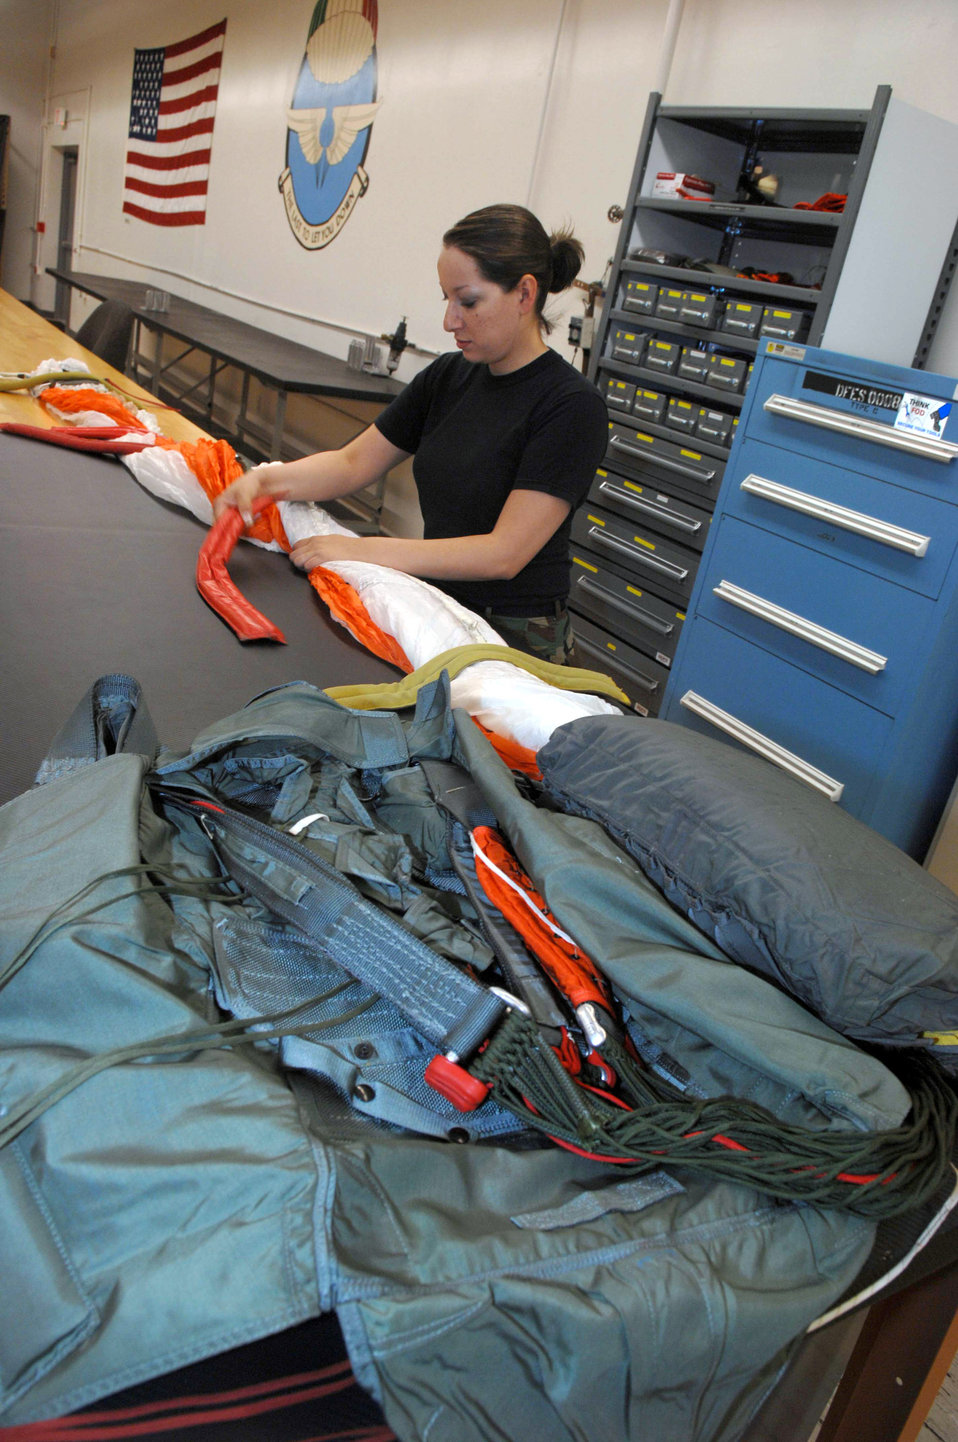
Aircrews depend on these Airmen

Senior Airman Brenda Schaub packs a parachute June 25 at Davis-Monthan Air Force Base, Ariz. Airman Schaub is an aircrew flight equipment journeyman assigned to the 355th Operation Support Squadron where she also maintains, repairs, and fabricates other types of survival equipment.